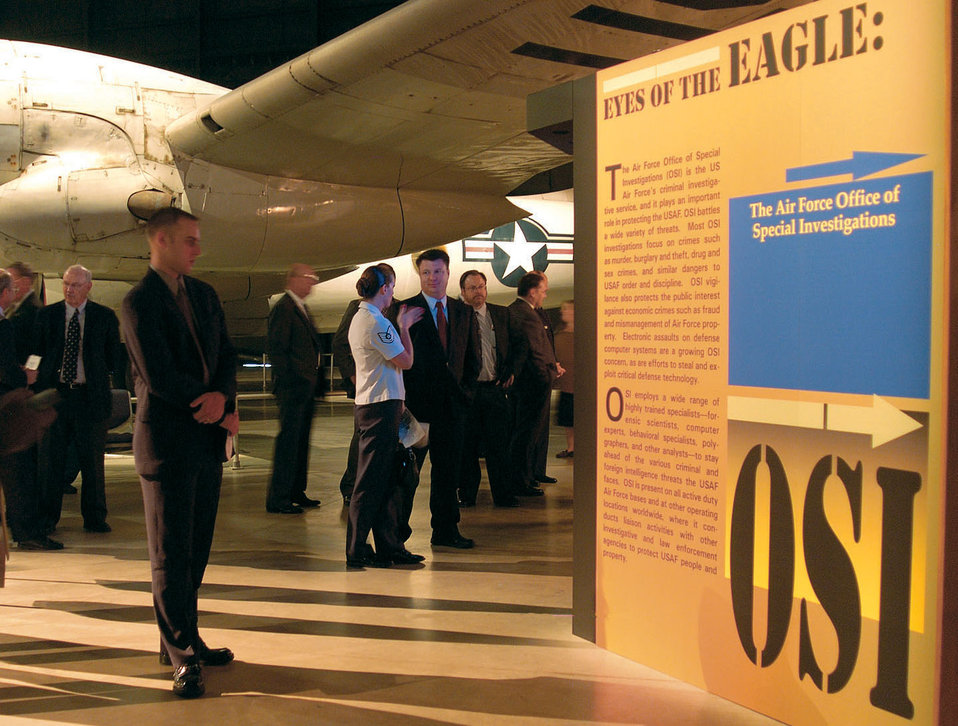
Office of Special Investigations exhibit opens at Air Force museum

DAYTON, Ohio -- A new exhibit featuring the Air Force Office of Special Investigations opened at the National Museum of the U.S. Air Force here April 20. The exhibit highlights notable OSI tasks such as counterintelligence, responding to espionage and investigating terrorist attacks. A disguise kit, surveillance cameras, electronic listening devices and a wristwatch modified to act as a radio transmitter are some of the items used by OSI agents that are featured in the display.